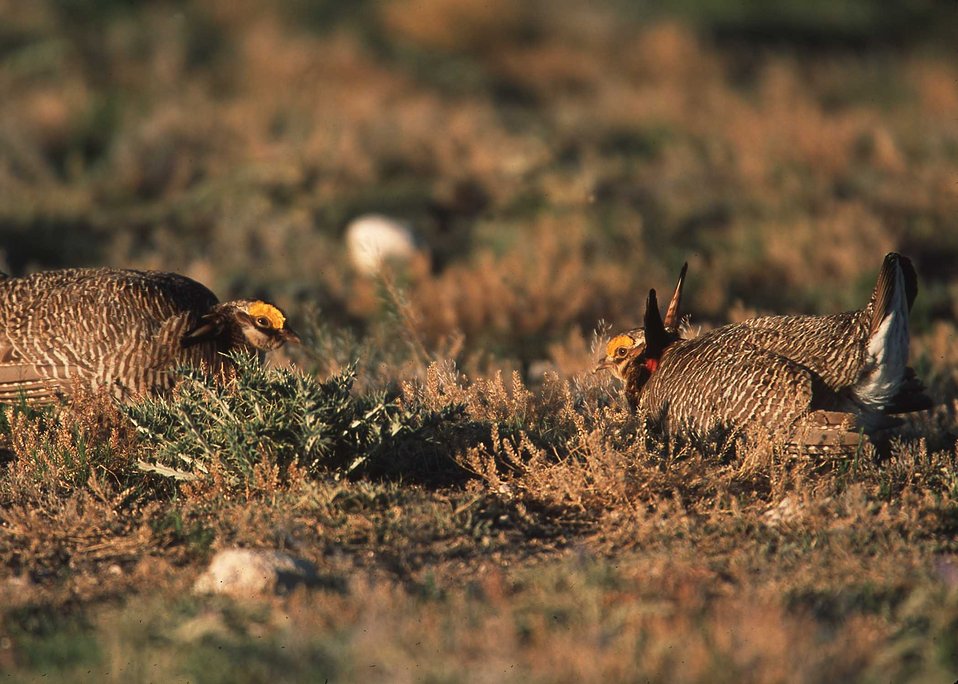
Lesser prairie chickens in Eastern New Mexico.